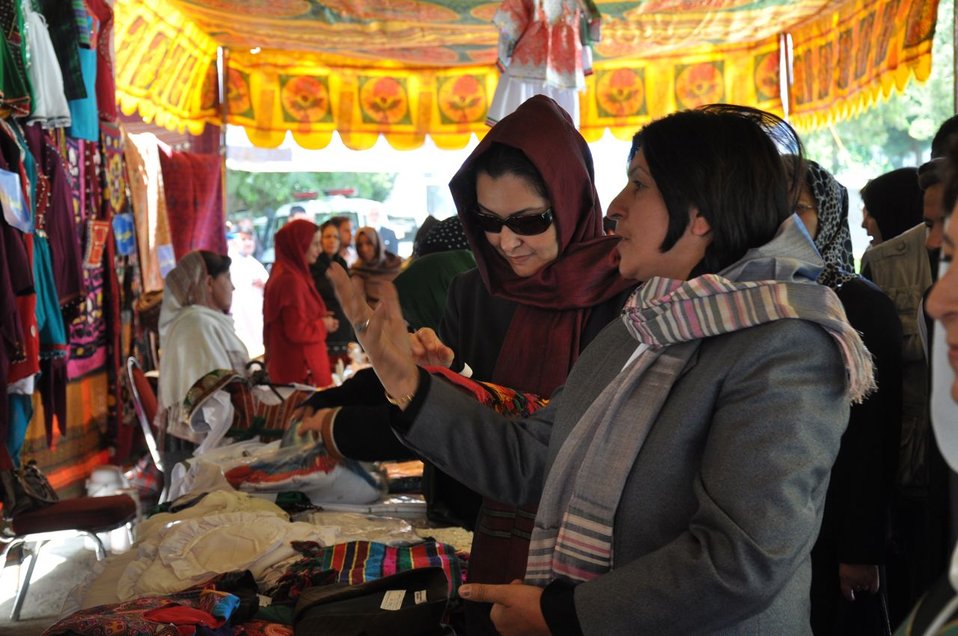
Mother's Day in Afghanistan

The Minister of Public Health (in red scarf) shops in the bazaar